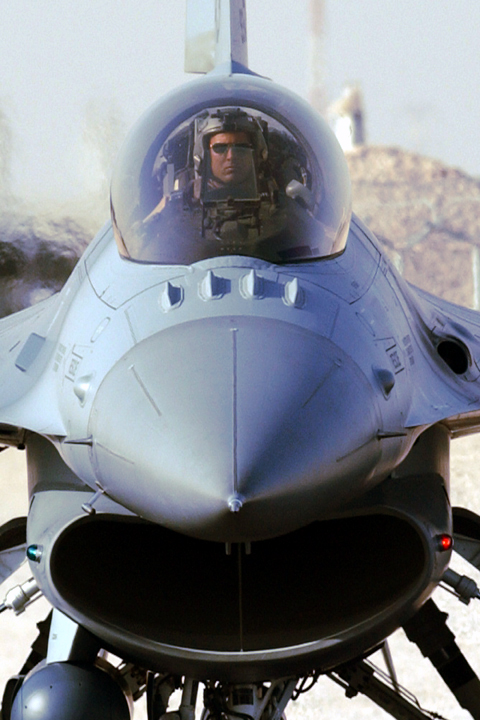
Abu is coming

OPERATION IRAQI FREEDOM -- An F-16CJ pilot known as